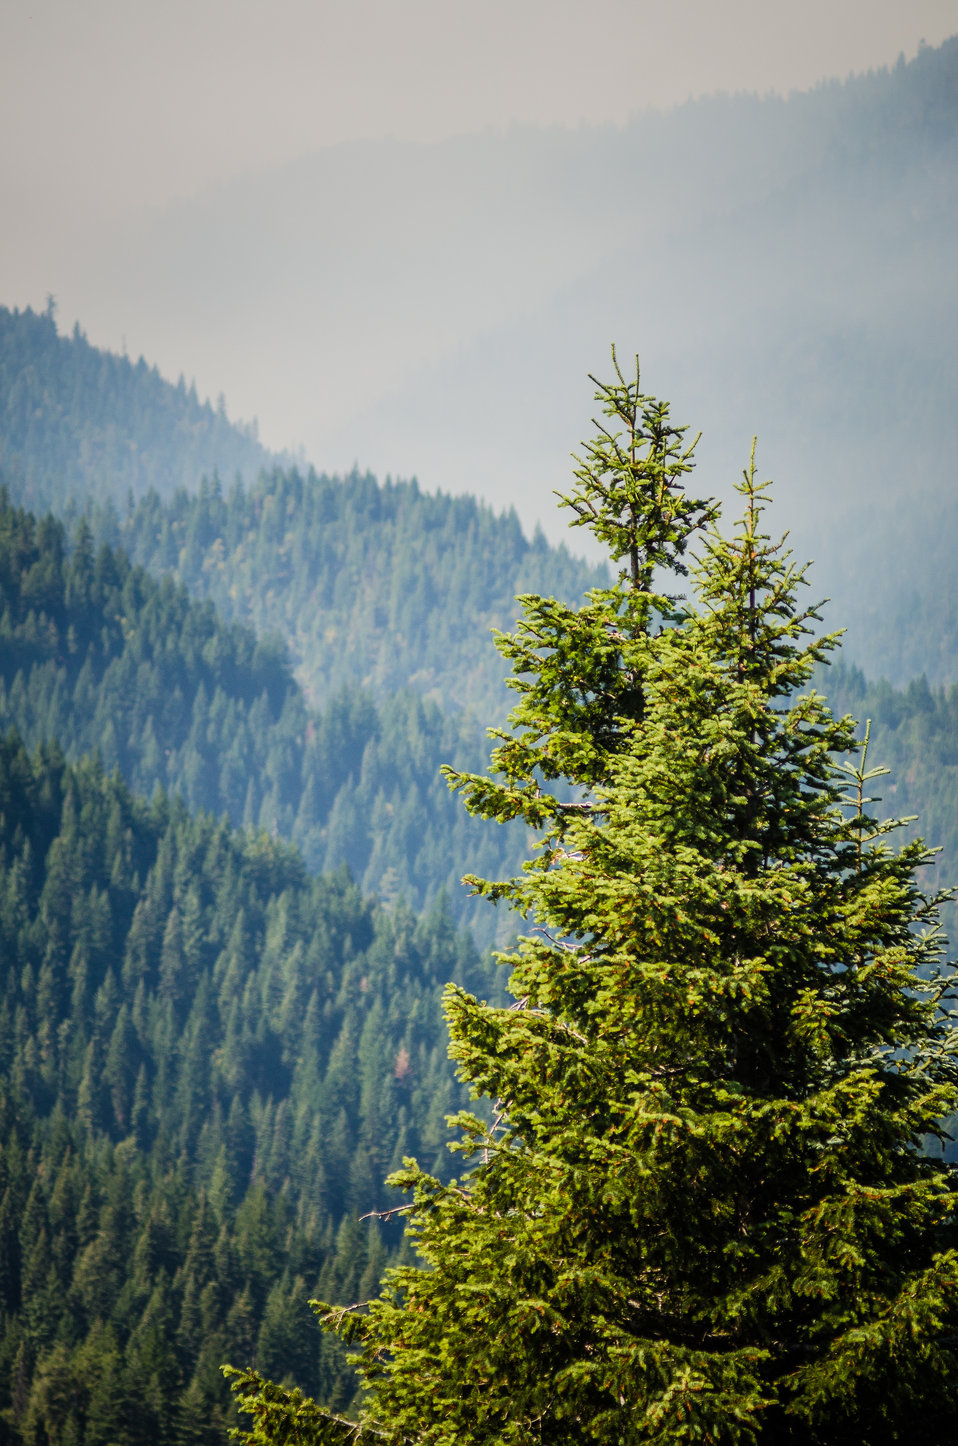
Klamath National Forest, site of the Salmon River Complex Wildlands Fire, northwest of Sawyers Bar and west of Etna and Yreka, CA, on Wednesday, Aug. 6, 2013.